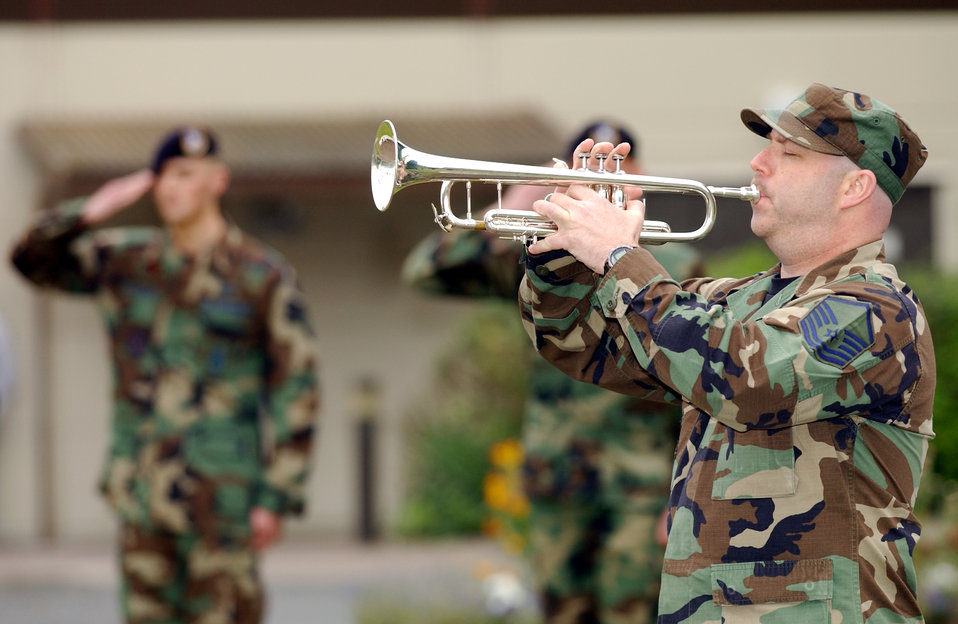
Police taps

ROYAL AIR FORCE LAKENHEATH, England -- Master Sgt. Richard Marion plays taps as Airmen with the 48th Security Squadron render salutes during a retreat ceremony here honoring Police Week on May 19. In 1962, President John F. Kennedy signed a proclamation which designated May 15th Peace Officers Memorial Day and the week in which that date falls as "Police Week". The first official memorial service took place May 15, 1982. Sergeant Marion is the noncommissioned officer in charge of medical logistics for the 48th Medical Support Squadron.